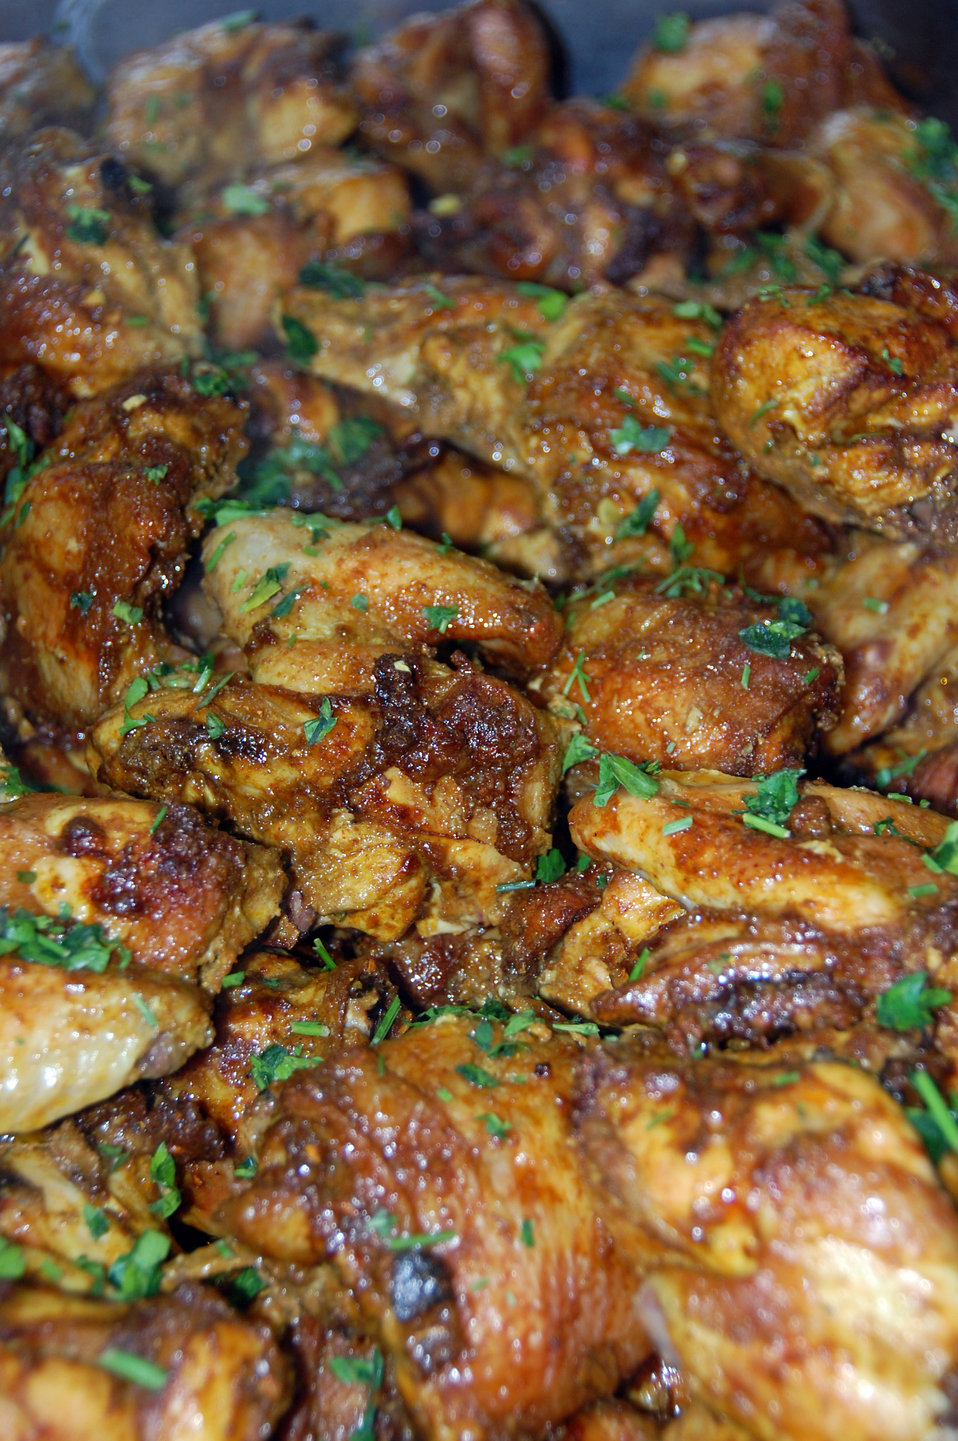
Airmen get first-hand insight to favorite meal

Chicken Tikka, an Indian dish, is just one of four menu items members of the 387th Air Expeditionary Group learned how to prepare during a cooking class held by the Falcon Cafe staff April 6, 2010, at an air base in Southwest Asia.